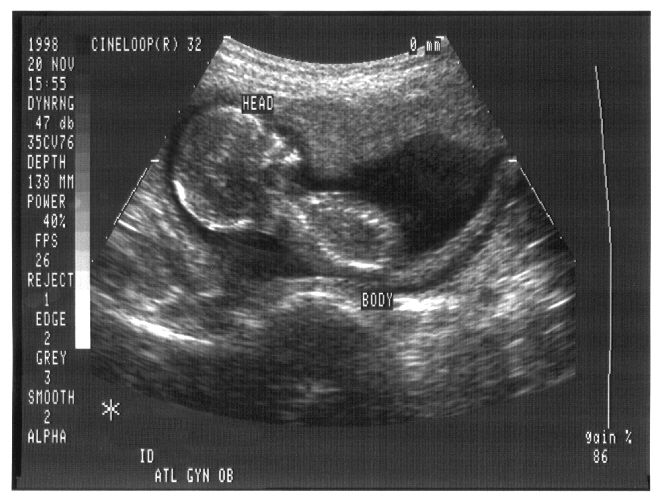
Ultrasound image of fetus at four months.